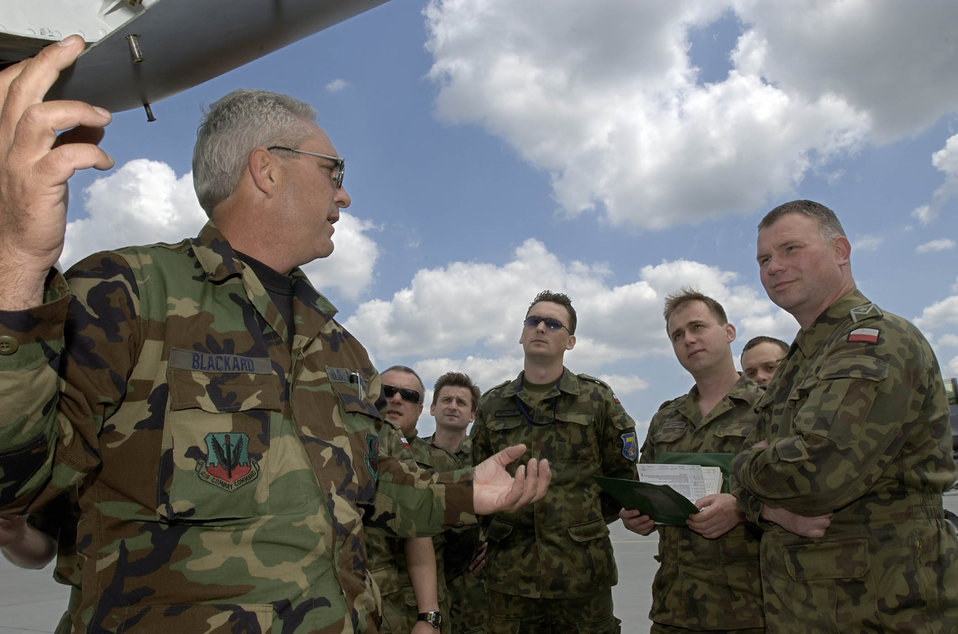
Guardsmen familiarize Polish airmen with F-16

POZNAN, Poland -- Master Sgt. Kenneth Blackard demonstrates an F-16 Fighting Falcon preflight inspection to Polish airmen here. Airmen from the Illinois Air National Guard's 183rd Fighter Wing are familiarizing Polish airmen with the F-16 during the U.S. European Command exercise Sentry White Falcon 2005 through June 17. In 2006, the Polish air force will start receiving their own F-16s that will begin replacing their Soviet-made MiG fighters as the country modernizes its military to NATO standards.